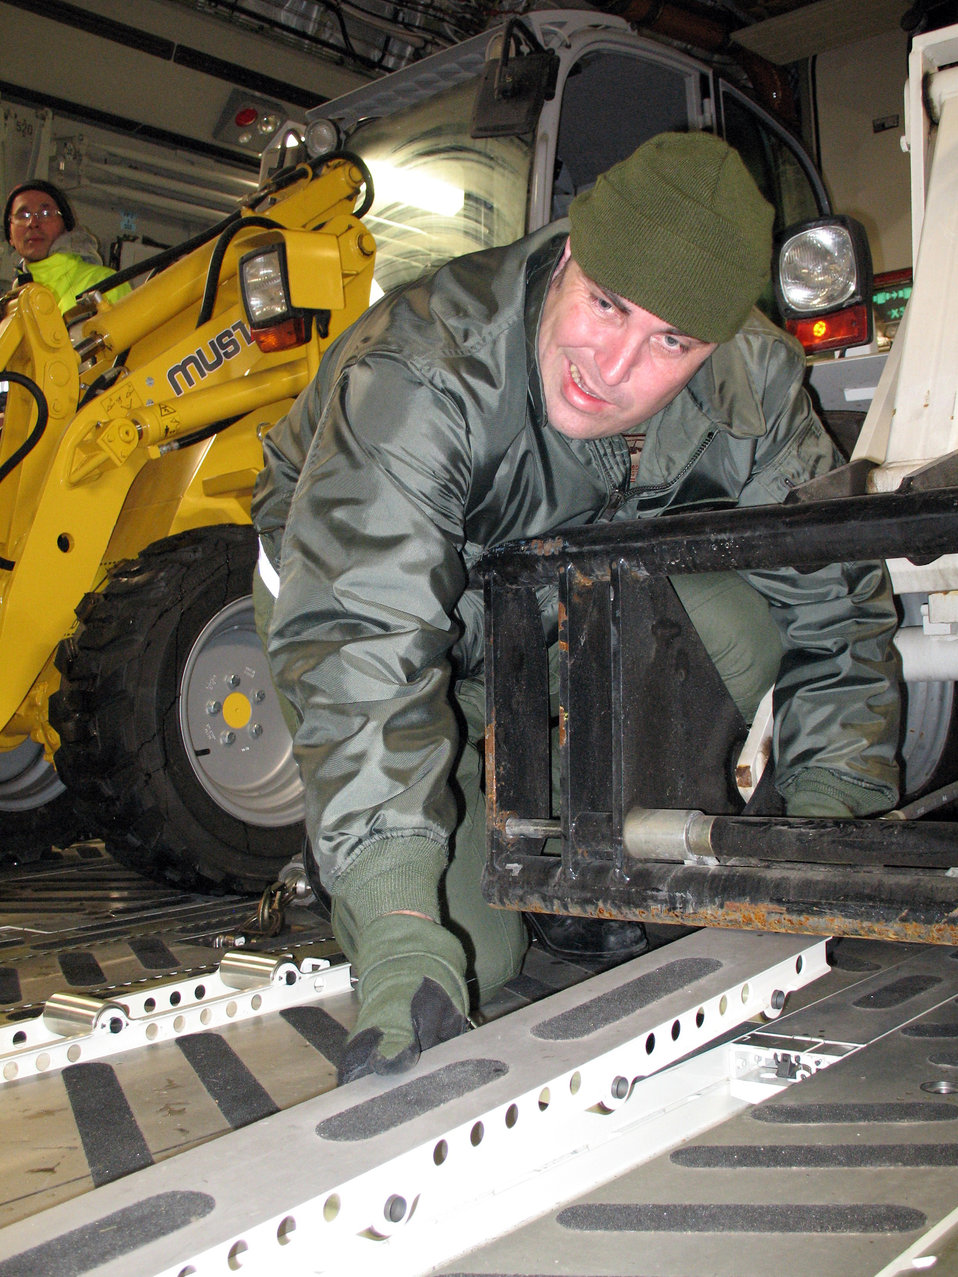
Multinational aid delivered to Haiti

The Netherlands air force Master Sgt. Marcel Boeija reconfigures a C-17 Globemaster III on Jan. 20, 2010, to load aid materials and equipment bound for Haiti. The aircraft and its multinational aircrew were preparing for a second mission from Orebro, Sweden. The crew had previously delivered 15 pallets of material to construct a headquarters for aid workers at the Port-au-Prince, Haiti, airport on Jan. 18, 2010. Sergeant Boeija is a loadmaster with the Heavy Airlift Wing at Papa Air Base, Hungary.